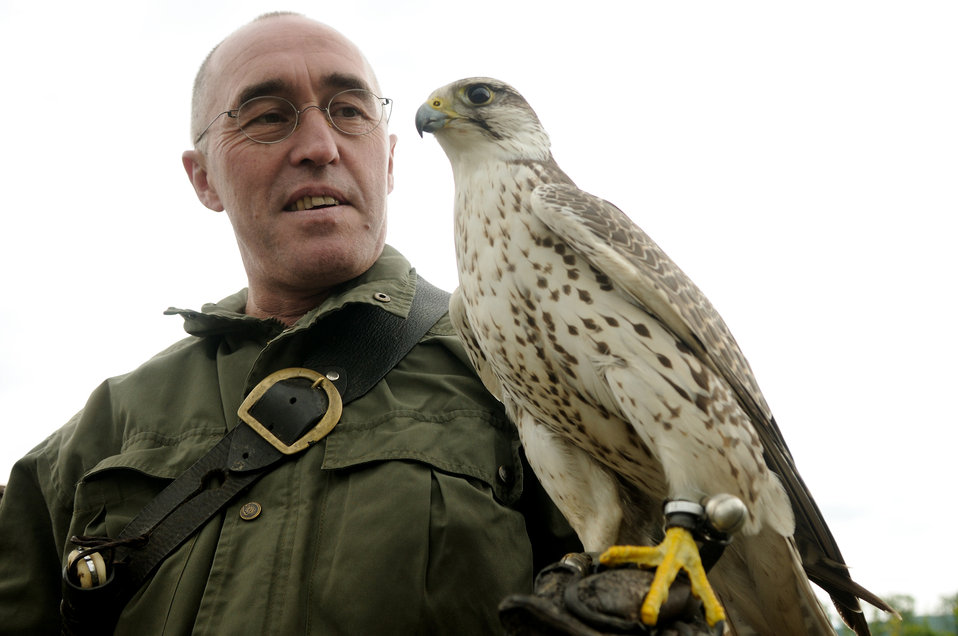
Falconer

Ronald Leu holds Gina, a 5-year-old falcon, July 29, 2010 at Spangdahlem Air Base, Germany. Gina, a mix of both saker falcon and gyrfalcon breeds, is trained to hunt wildlife near the flightline to help prevent aircraft damage. Mr. Leu is the base falconer with the 52nd Civil Engineer Squadron.